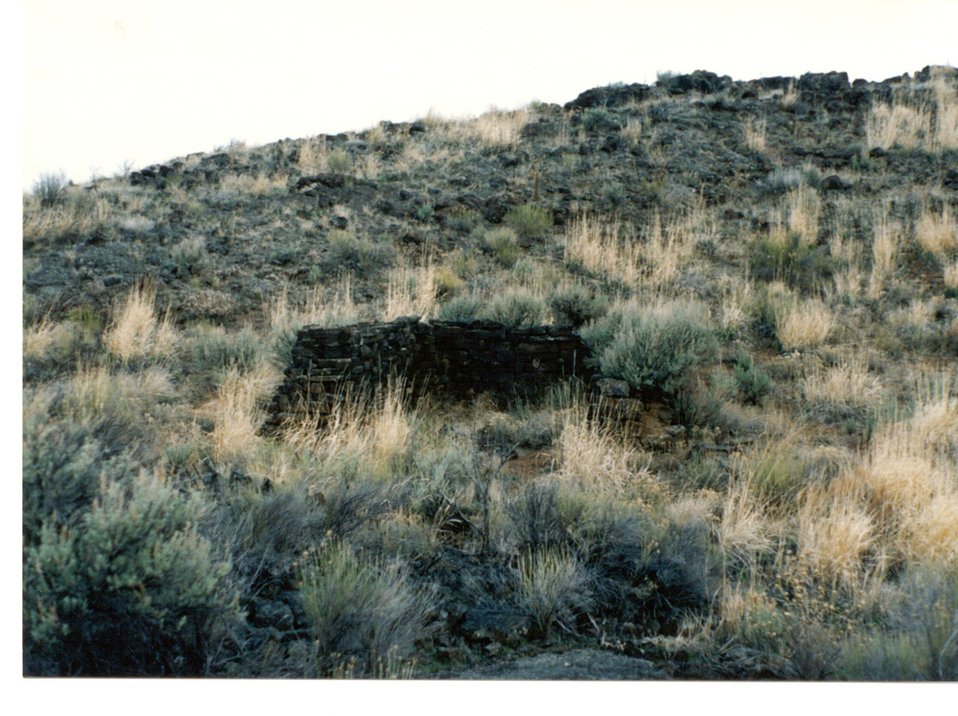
Stone Building at foot of Rift Craters of the Moon Shoshone Field Office USRD Upper Snake River District